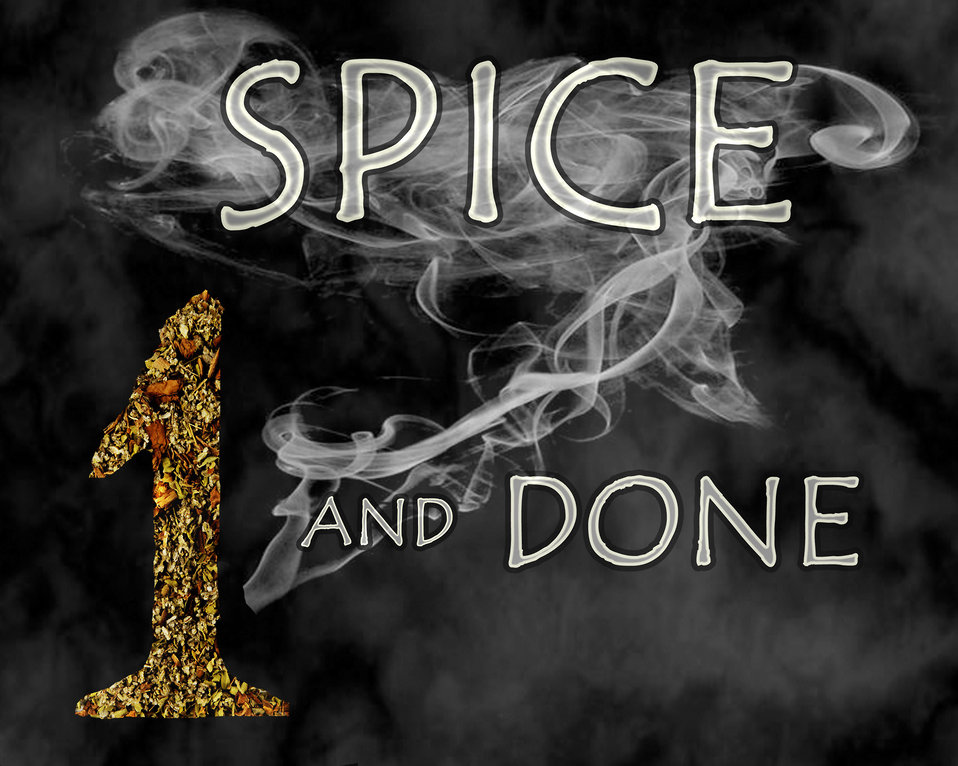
Spice illegal for Airmen, produces dangerous side effects

Airmen are banned from using the drug